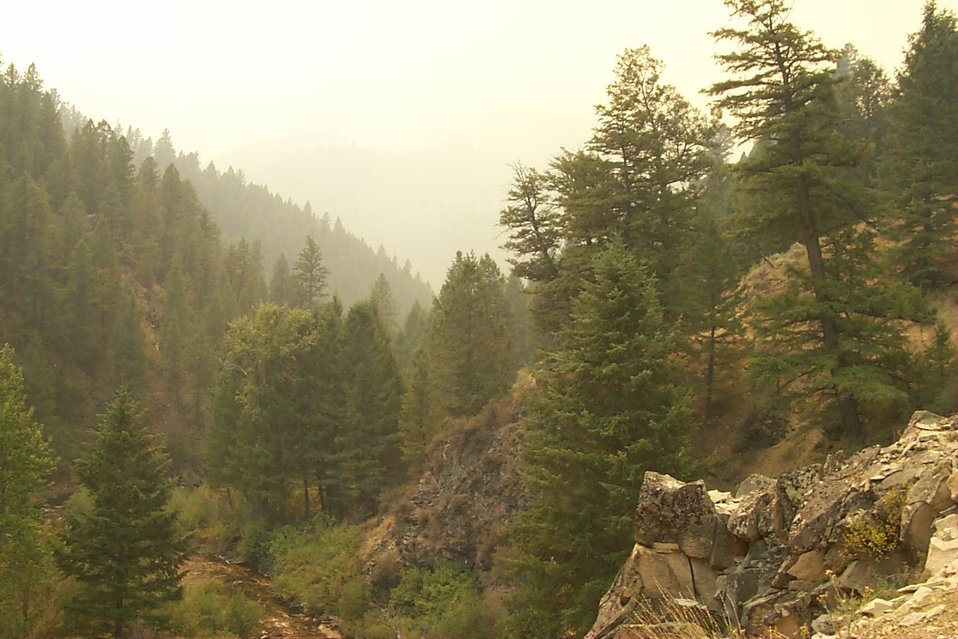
Smoke Fire Clearwater Fire Salmon Field Office USRD Upper Snake River District